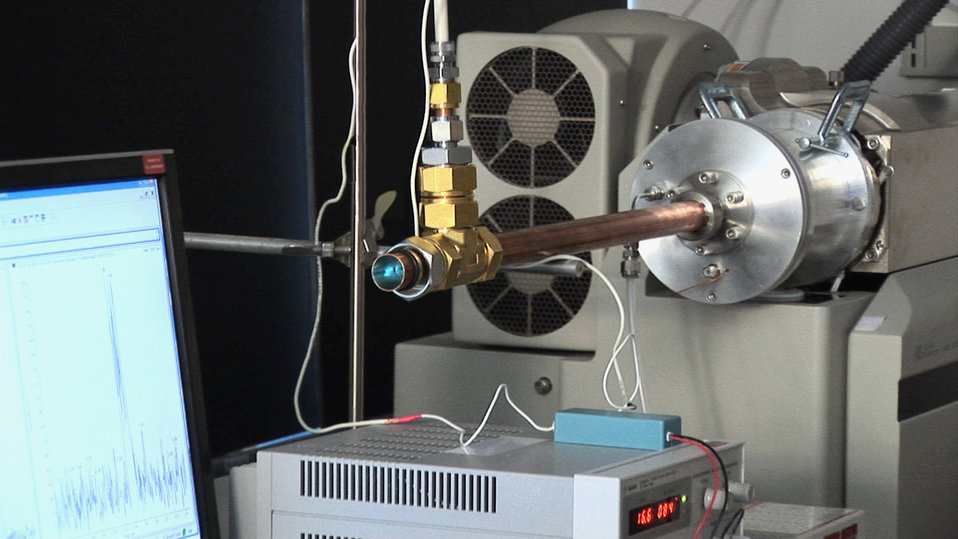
A quick, accurate and highly sensitive process to reliably detect minute traces of explosives on luggage, cargo or traveling passengers has been demonstrated by scientists at Pacific Northwest National Laboratory.